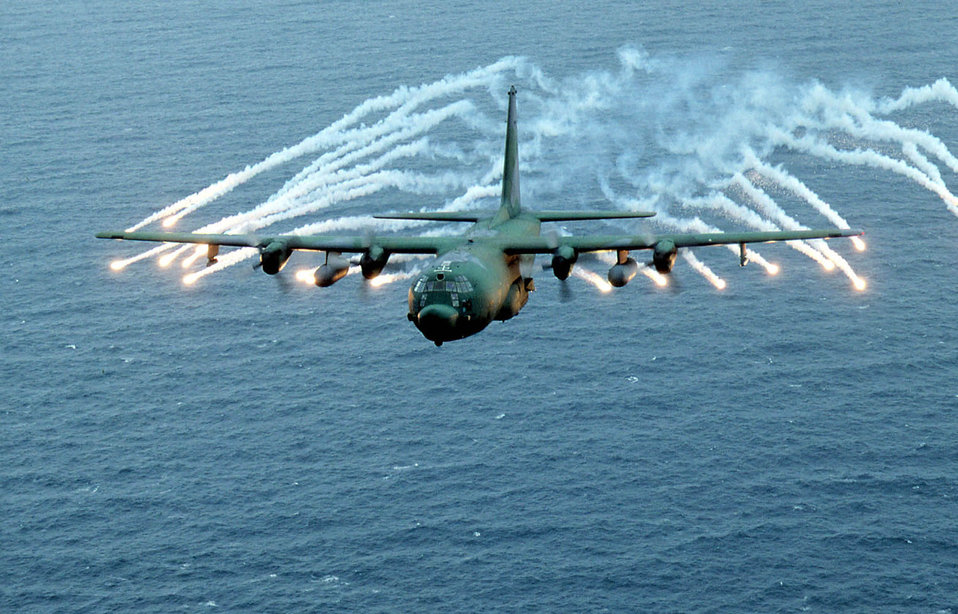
Combat Talon

FILE PHOTO -- The mission of the MC-130E Combat Talon I and MC-130H Combat Talon II is to provide global, day, night and adverse weather capability to airdrop and airland personnel and equipment in support of U.S. and allied special operations forces. The MC-130E also has a deep penetrating helicopter refueling role during special operations missions. These aircraft are equipped with in-flight refueling equipment, terrain-following, terrain-avoidance radar, an inertial and global positioning satellite navigation system, and a high-speed aerial delivery system. The special navigation and aerial delivery systems are used to locate small drop zones and deliver people or equipment with greater accuracy and at higher speeds than possible with a standard C-130. The aircraft is able to penetrate hostile airspace at low altitudes and crews are specially trained in night and adverse weather operations.